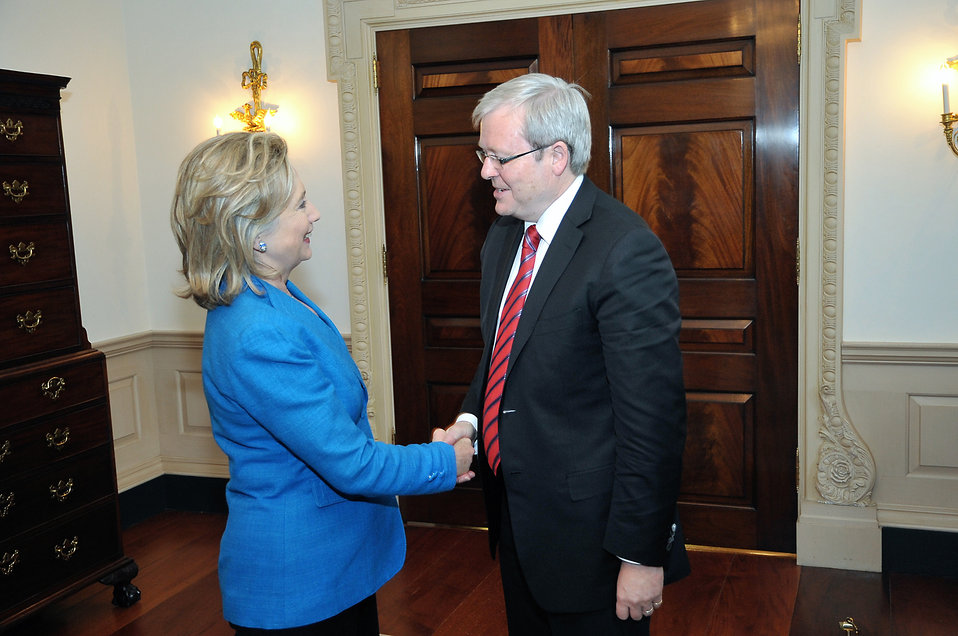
Secretary Clinton Shakes Hands With Australian Foreign Minister Rudd

U.S. Secretary of State Hillary Rodham Clinton shakes hands with Australian Foreign Minister Kevin Rudd following their bilateral meeting at the U.S. Department of State in Washington, D.C., on September 17, 2010.